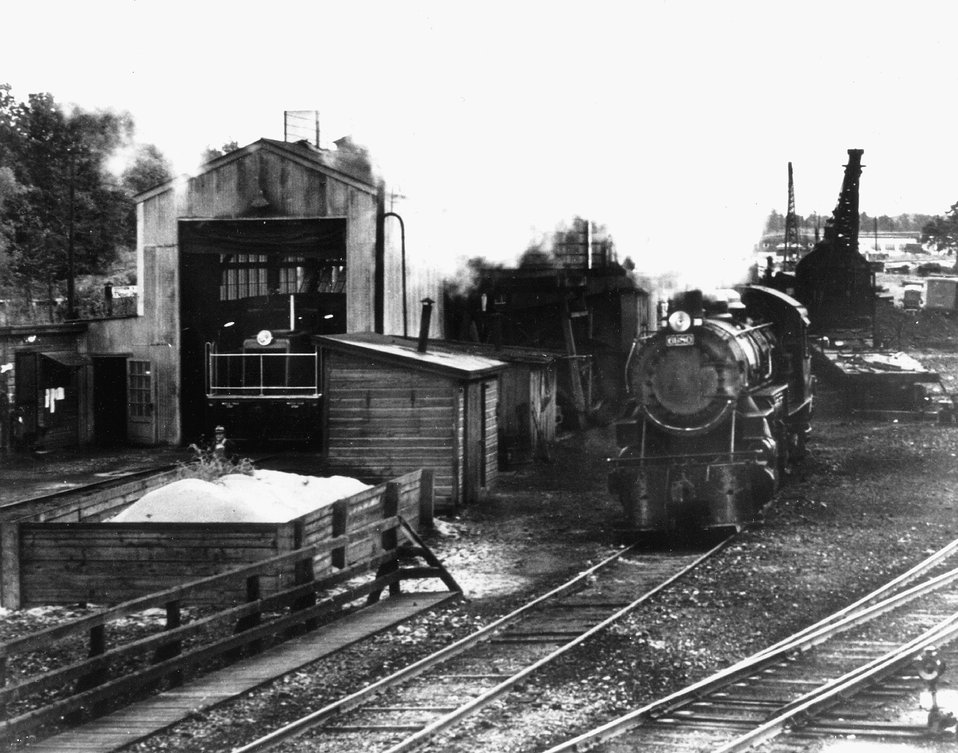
Steam Engine - Railroad Yard Elza Area. c. 1946